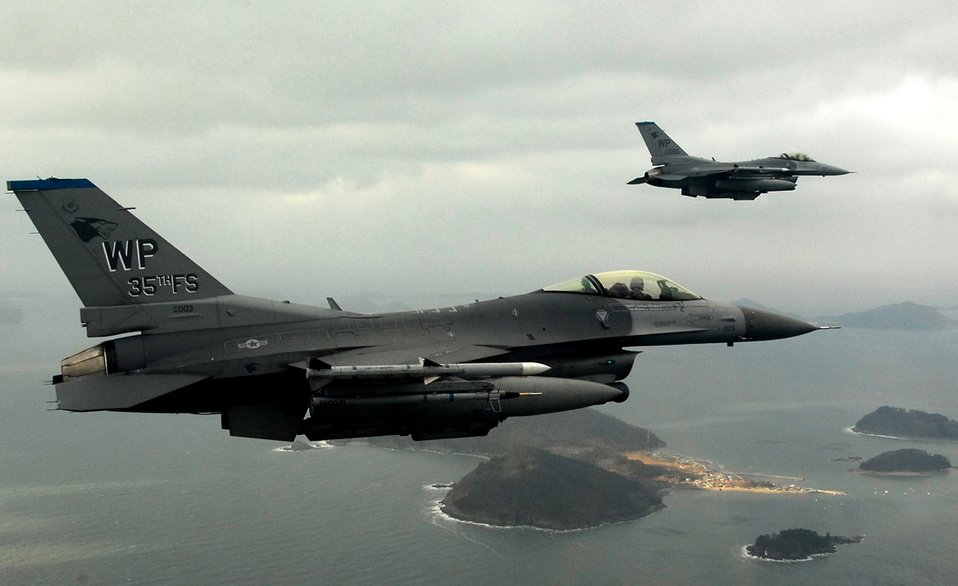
Falcon view of South Korea

F-16 Fighting Falcons fly on a training mission Jan. 30 over the South Korean peninsula. Pilots assigned to the 35th Fighter Squadron from Kunsan Air Base, South Korea, use training missions to simulate actual conditions they may face in combat and keep their warfighting skills honed.